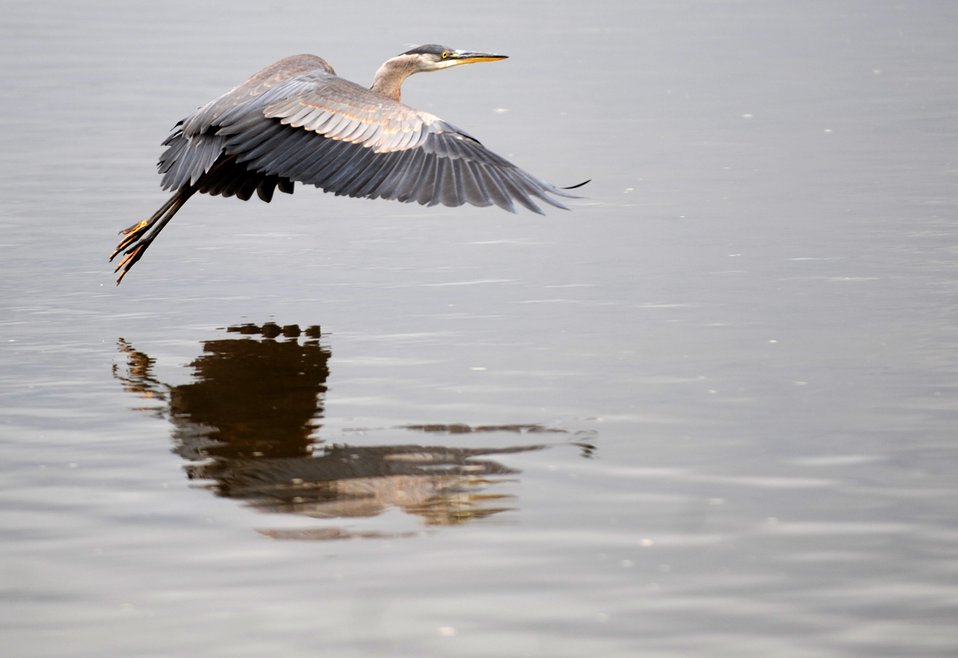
Great Blue Heron

Wildlife like this majestic Great Blue Heron make their home in and along the lower Duwamish River. You might also catch glimpses of eagles, ospreys, seals, and otters when traveling along the river. EPA added about five miles of the lower reach of the river to its list of Superfund cleanup sites in 2001. Visit www.epa.gov/region10/duwamish to learn more about EPA's efforts to clean up and restore the lower Duwamish River.